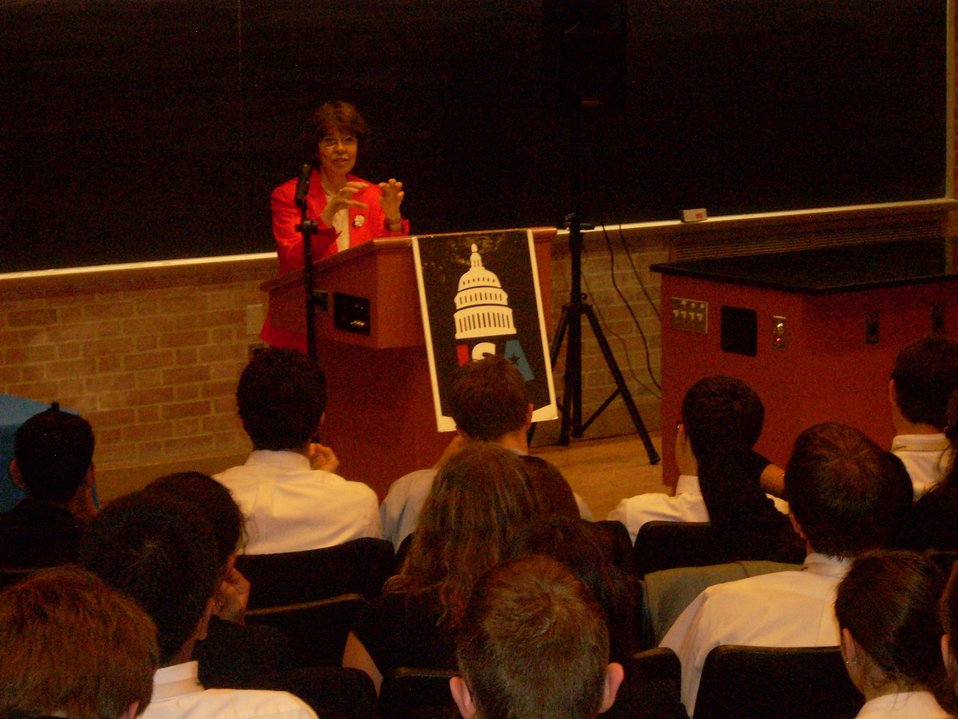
Press Office Coleman Speaks With High School Students

Maryruth Coleman, Director of the Press Office for the Bureau of Economic, Energy and Business, speaks with high school students interested in what Economic Officers do in the Foreign Service at Georgetown University in Washington, D.C., on June 30, 2011.